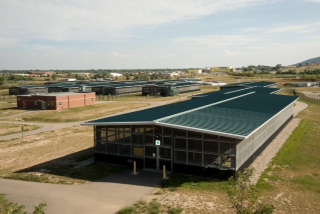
This is an image of the U.S. Department of Agriculture (USDA) research facility in Fort Collins, CO.